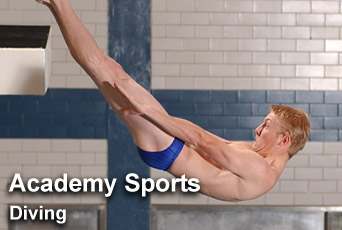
Academy sports: Diving

For up-to-date scores on all U.S. Air Force Academy sports, visit their Web site at www.goairforcefalcons.com.